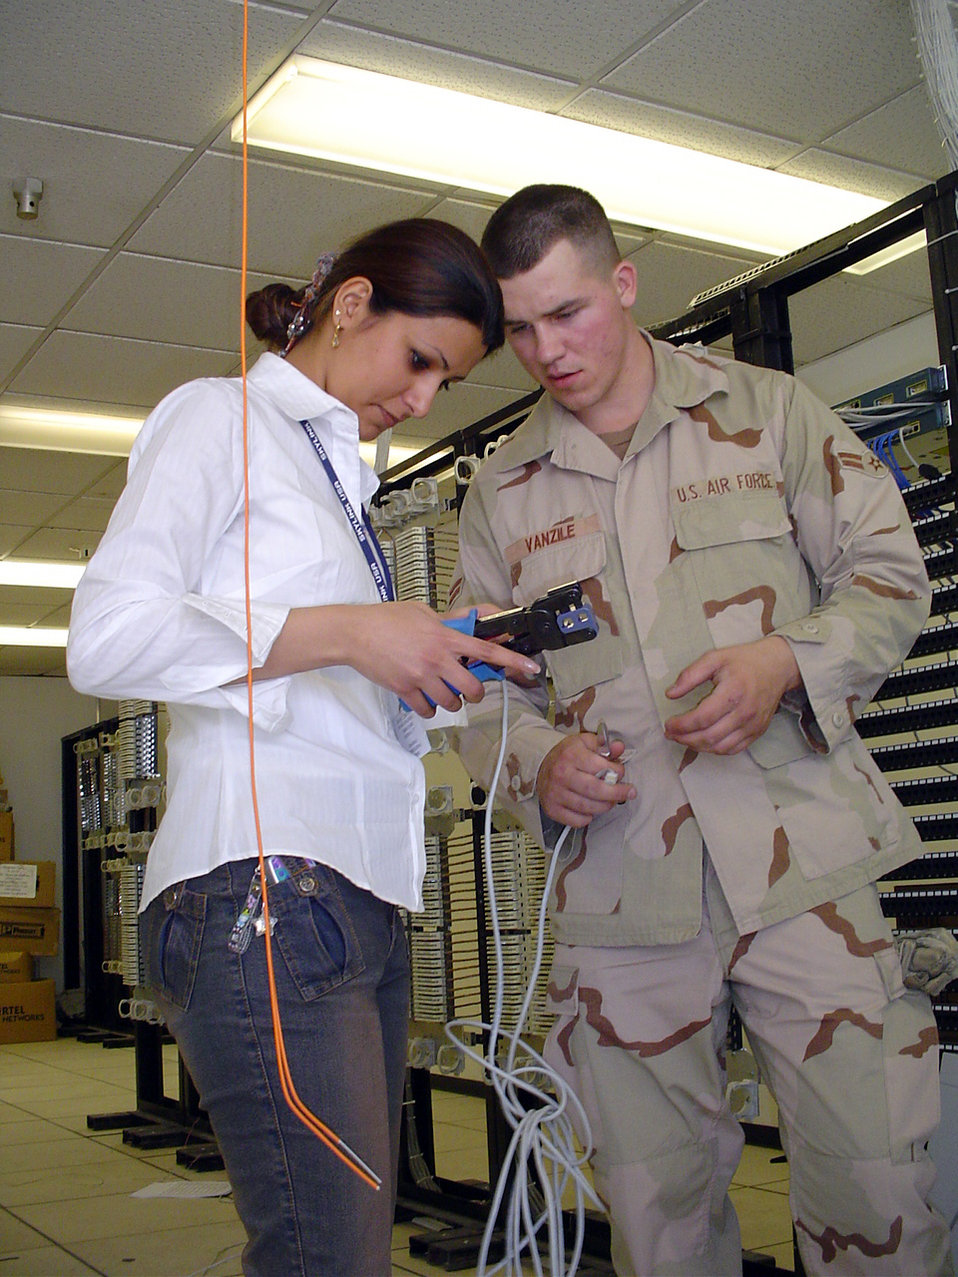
The hook up

BAGHDAD, Iraq -- Sarah Izet and Airman 1st Class Brendon Vanzile attach connectors to communications wires. On April 3, a team of Airmen helped lay more than 700 feet of fiber-optic cables to bring high-speed access to the Baghdad International Airport. Ms. Izet is an information technician with a contractor, and Airman Vanzile is a telephone maintenance journeyman with the 447th Expeditionary Communications Squadron.